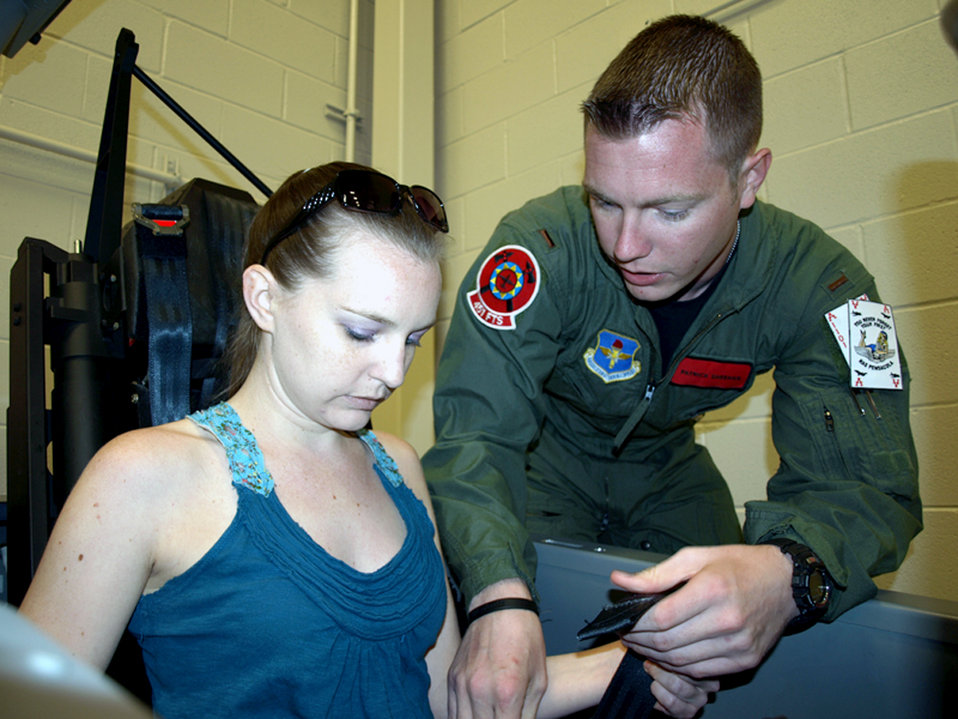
CSO training

Second Lt. Patrick Sheehan shows a T-6 Texan II cockpit mock-up to his sister, Kate, April 14, 2011, at Naval Air Station Pensacola, Fla. The mock-up is used by combat systems officer trainees to practice getting into and out of the T-6, as well as canopy operation procedures. Lieutenant Sheehan is a CSO trainee participating in the CSO training program sponsored by members of the 479th Flying Training Group there.